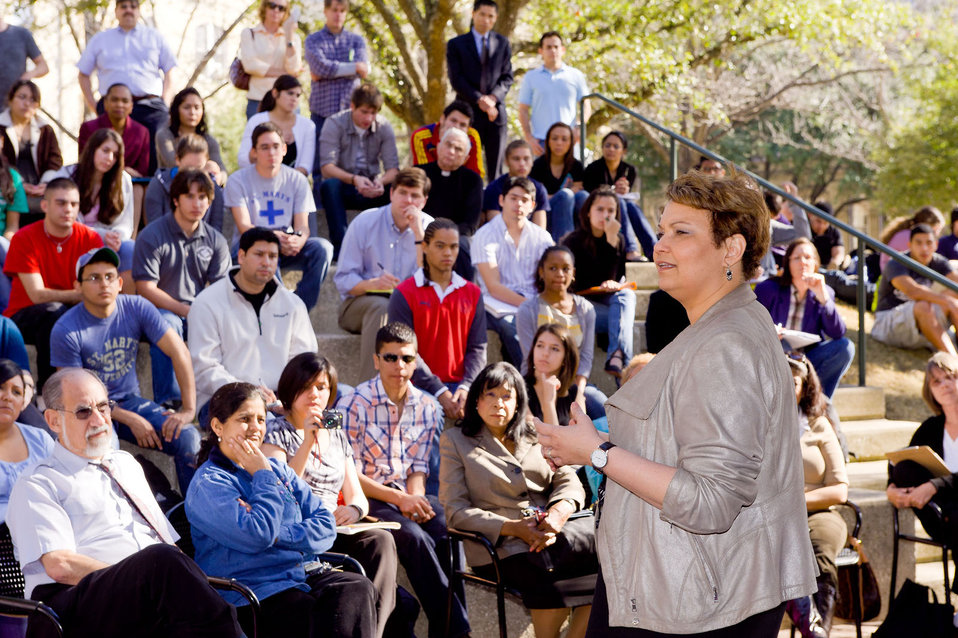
January 2011 Administrator Lisa Jackson speaks about the environment in San Antonio